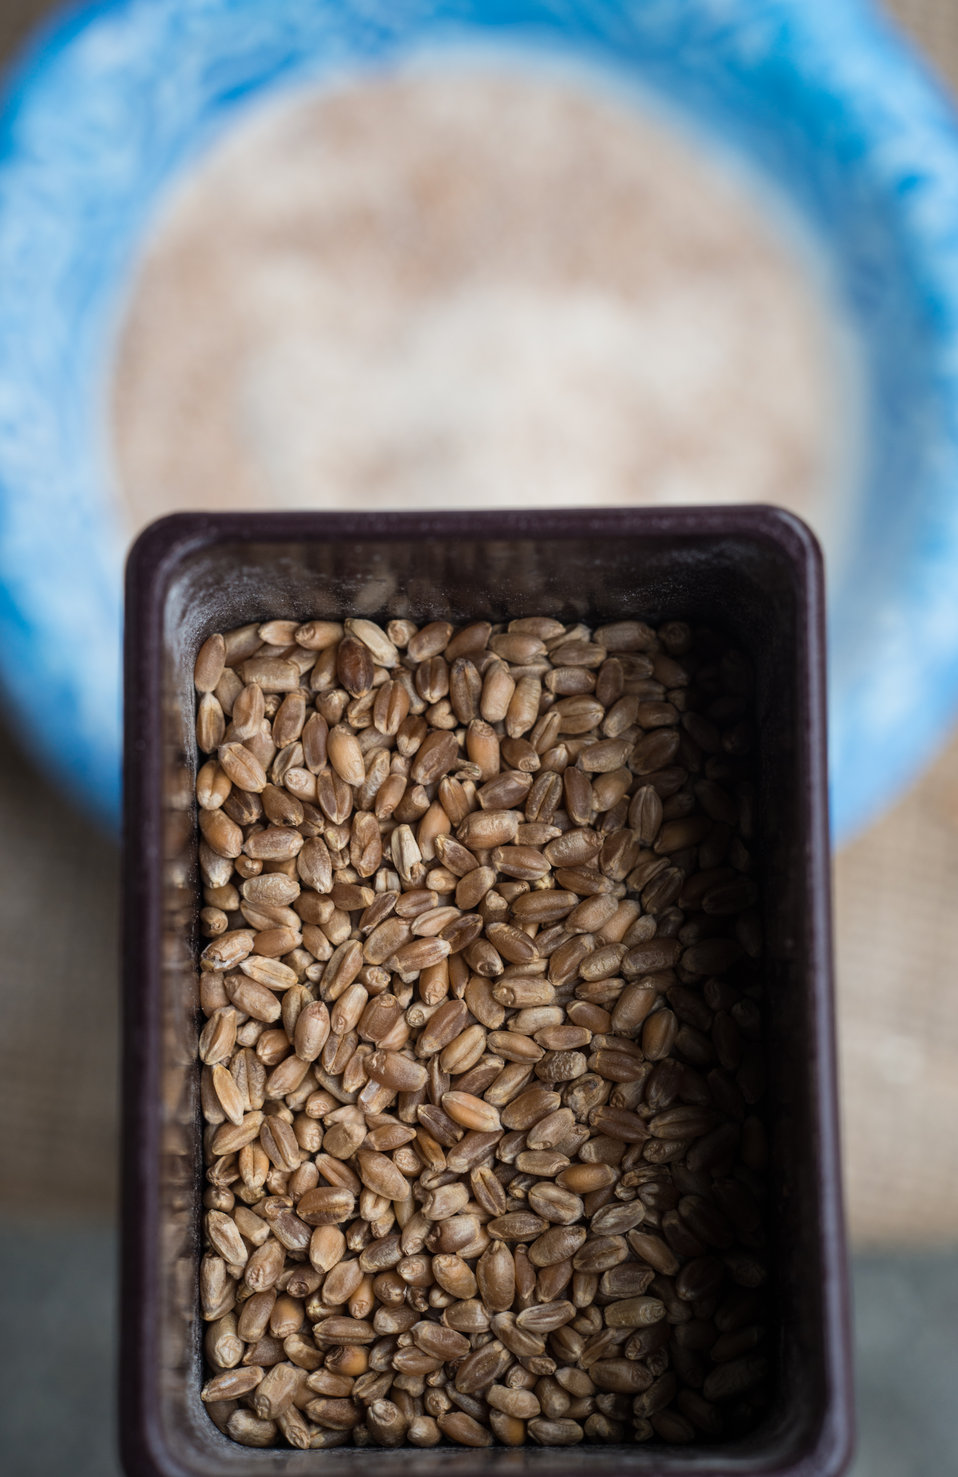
Wheat grains before and after being ground at the 18th U.S. Department of Agriculture (USDA) summer farmers market final outdoor market of the season at the USDA Whitten Building east parking lot in Washington, DC, on Friday, November 22, 2013.